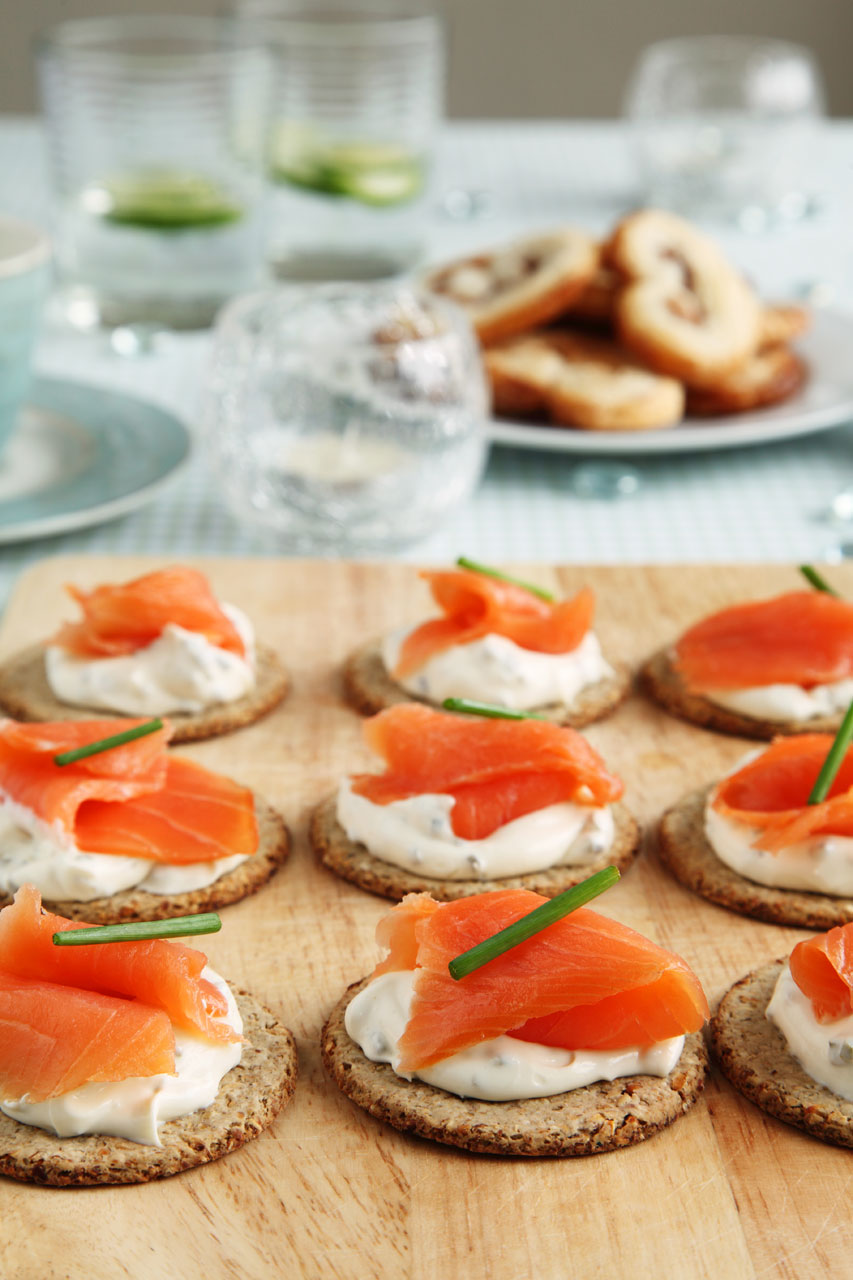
Smoked salmon appetizer on table.